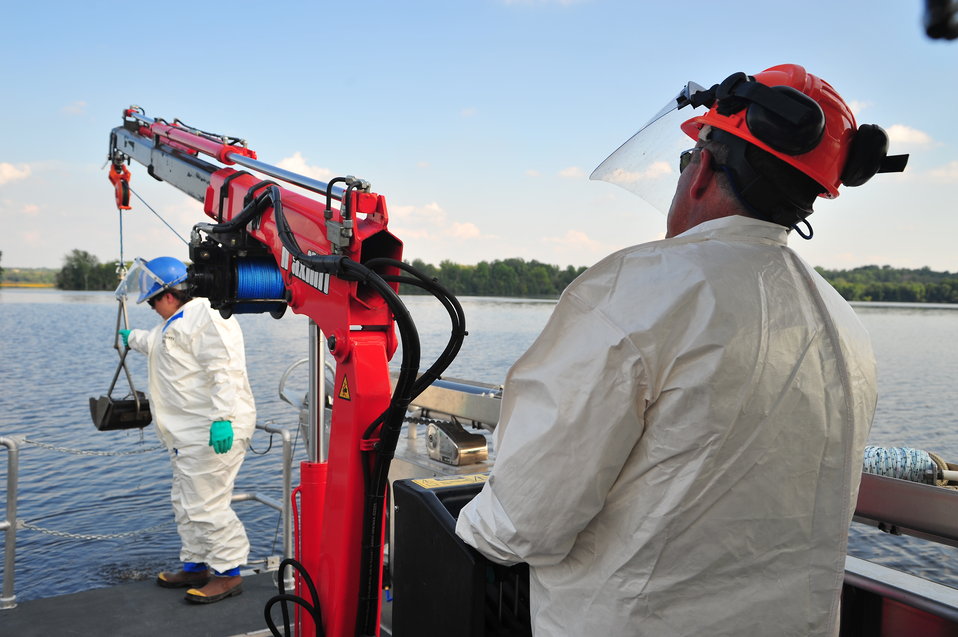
EPA's response to the Enbridge oil spill

August 2, 2010 - Water and sediment sampling operations during Enbridge Spill Response on Morrow Lake near Battle Creek, Michigan from Mudpuppy II, EPA's news research vessel.